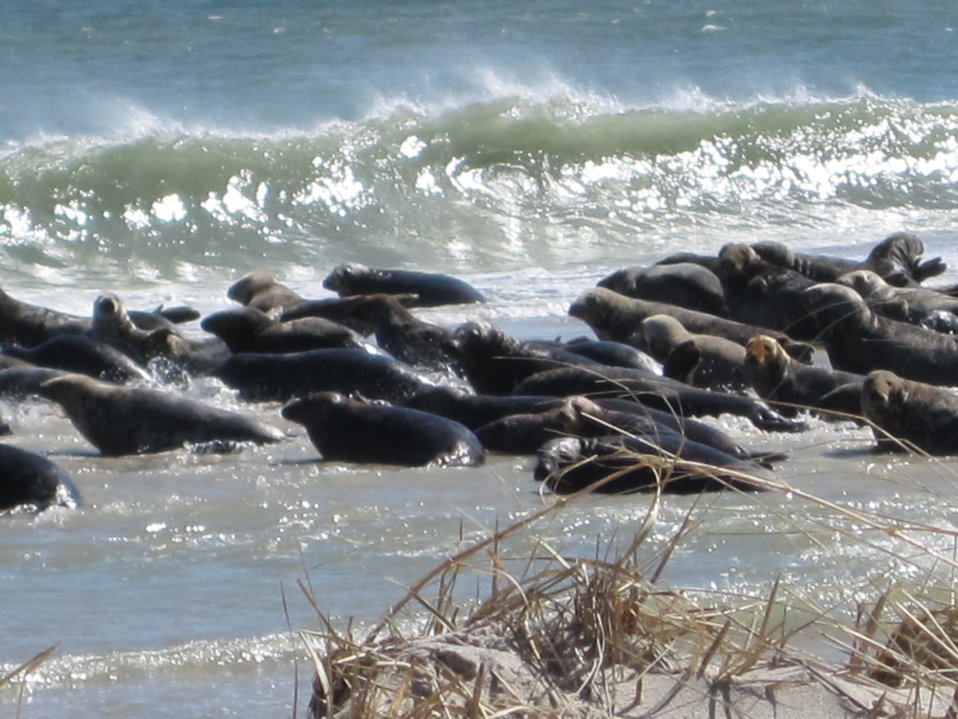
Seals on South Monomoy Island

Seals gather on South Monomoy Island, a few hundred yards from the lighthouse.

Credit: Keith Shannon/USFWS

Monomoy National Wildlife Refuge is part of the Eastern Massachusetts National Wildlife Refuge Complex.